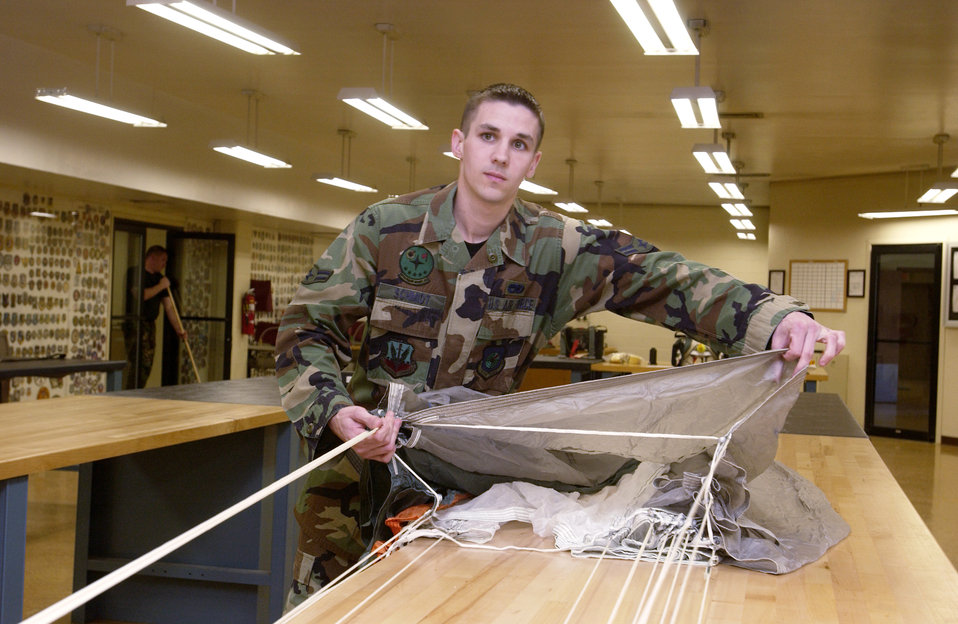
Three accidents; two Airmen; one chance to get it right

NELLIS AIR FORCE BASE, Nev. -- Airman 1st Class John Schmidt inspects a parachute. He and other Airmen in the 57th Equipment Maintenance Squadron's survival equipment flight packed the parachutes for pilots involved in three aircraft accidents here within six months, helping to save their lives